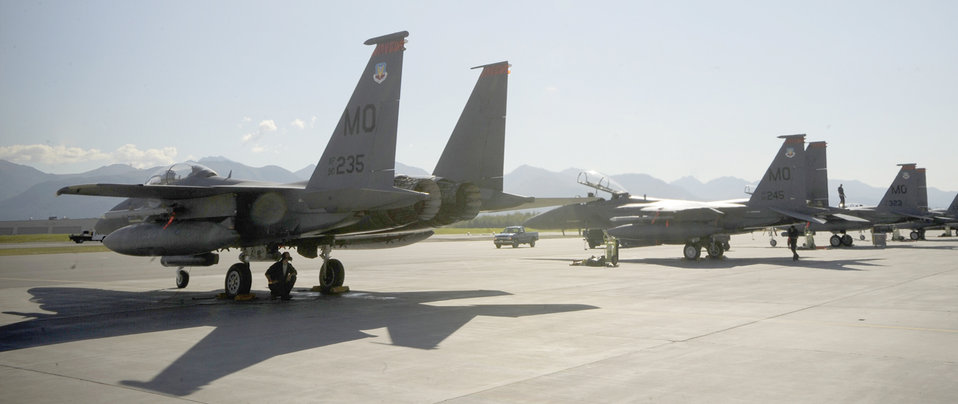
Eagles aid Predators

F-15E Strike Eagles wait on the flightline Aug. 25, 2010, at Joint Base Elmendorf-Richardson, Alaska. The F-15Es are from the 391st Fighter Squadron out of Mountain Home Air Force Base, Idaho and are deployed here to aid in F-22 Raptor training.